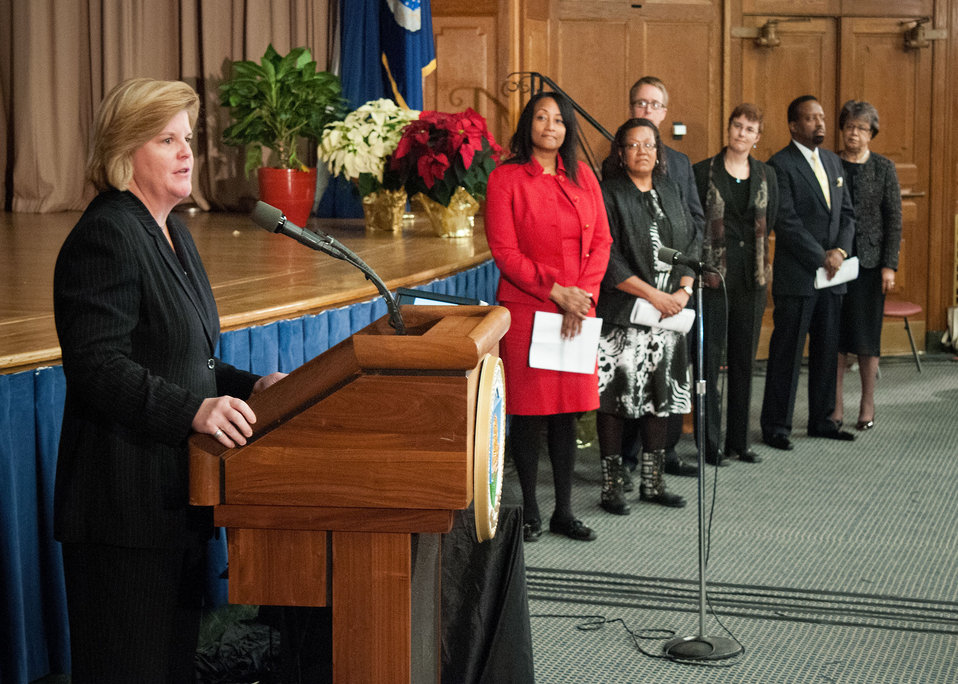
U.S. Department of Agriculture (USDA) Food and Nutrition Service employee Susan Siemietkowski offers a testimonial with other selected employees from USDA Mission Areas at USDA's Fourth Annual Cultural Transformation event held in Washington, D.C. on Tuesday, Dec. 4, 2012. The theme for the event “Faces of Cultural Transformation” Focusing on changing the way we serve our customers and cultural transformation’s benefits to employees.